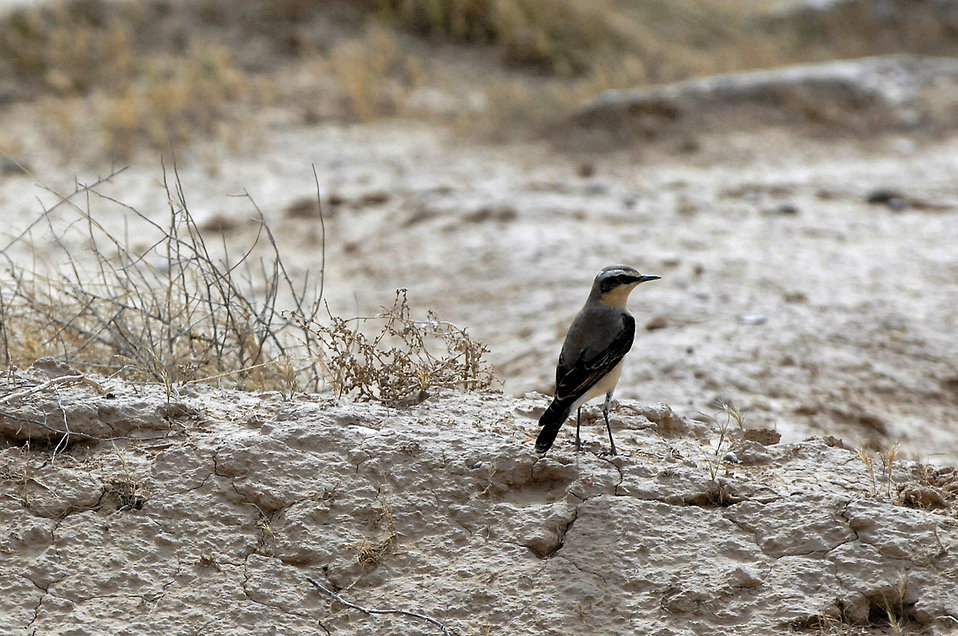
Study of Iraqi birds to help reduce aircraft mishaps

A northern wheatear is one of many types of birds that calls Balad Air Base, Iraq, home. Even small birds can pose a threat to flying aircraft because they can be sucked into engines and render them useless. To reduce the number of collisions between birds and aircraft, members of the 332nd Air Expeditionary Wing Safety Office depredate the birds on the base through the Bird Aircraft Strike Hazard program. On May 3, the remains of whole, depredated birds were shipped from the base to the Smithsonian Institution, National Museum of Natural History, Feather Identification Laboratory in Washington, D.C., for the birds to be analyzed by scientists. This marks the first shipment of whole bird remains to be sent from Iraq to the Smithsonian.